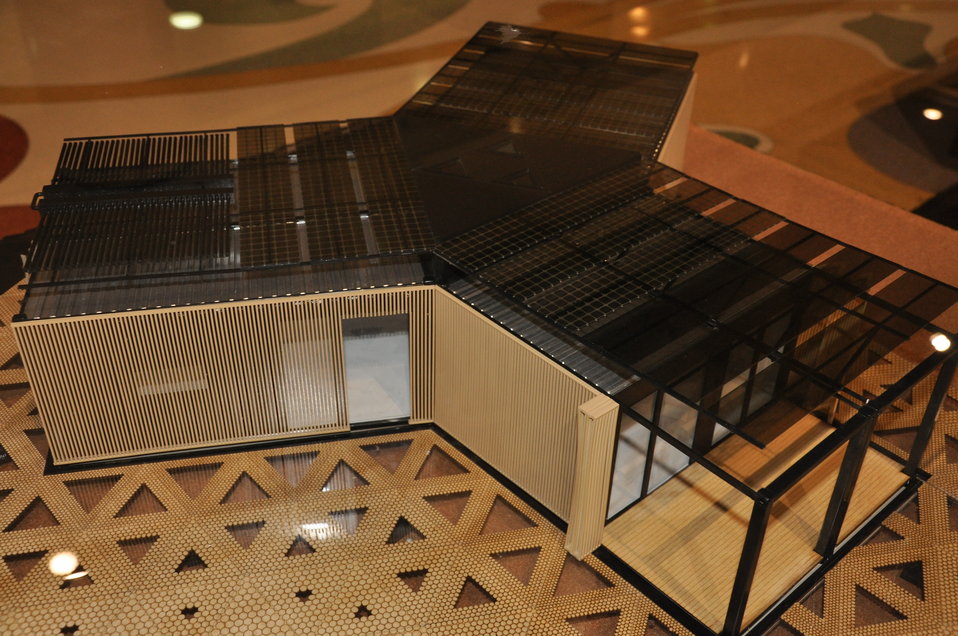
Team China